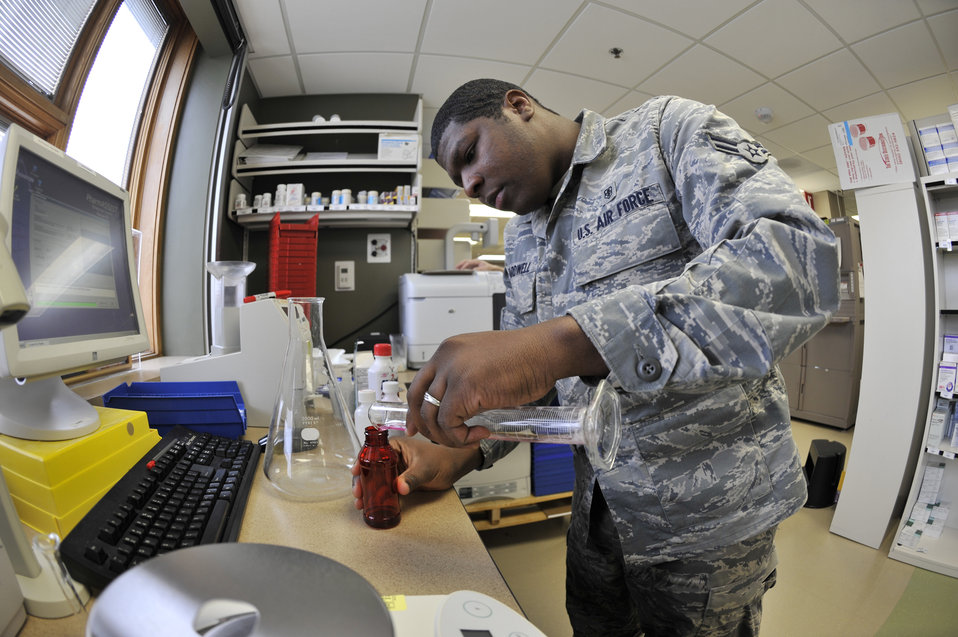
Fairchild Airman

Airman 1st Class Bart Hardwell participates in on-the-job training April 26, 2011, at Fairchild Air Force Base, Wash. Airman Hardwell is a public health technician assigned to the 92nd Aerospace Medicine Squadron. He has been accepted to pharmacy school for fall 2011.